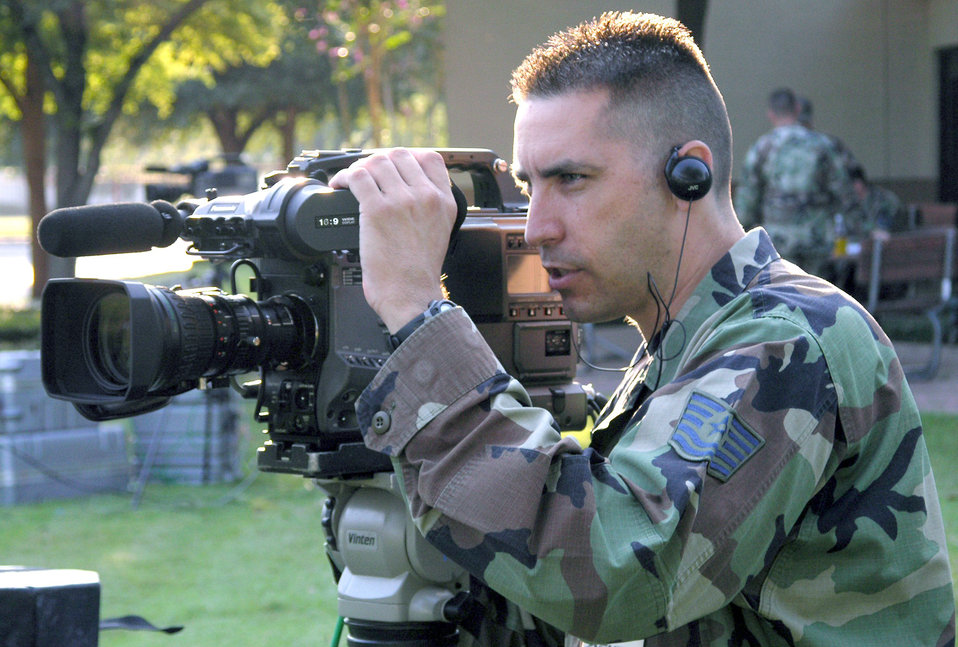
Holiday greetings teams head for overseas bases

SAN ANTONIO - Tech. Sgt. Brady McCarron tapes a mock holiday greeting during a training session here. Four teams from Army and Air Force Hometown News Service will soon travel to about 70 overseas installations in 40 days to tape Airmen, Soldiers, Sailors, Marines and Department of Defense civilians who want to send holiday messages home. Sergeant McCarron is a broadcaster with the hometown news service.